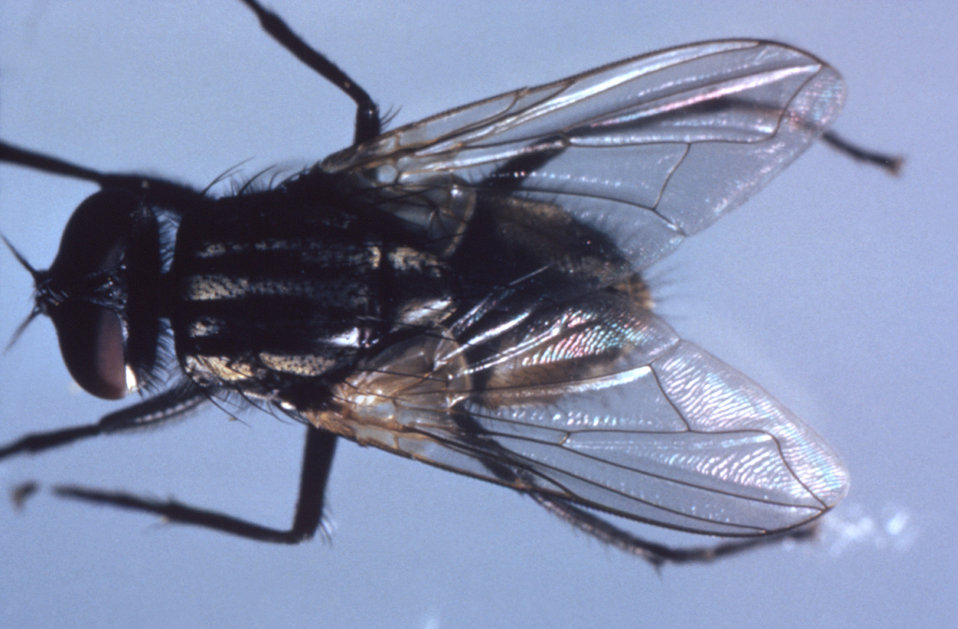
This fly, Musca domestica, was photographed during a 1972 study of disease carriers, and pests of migrant labor camps.